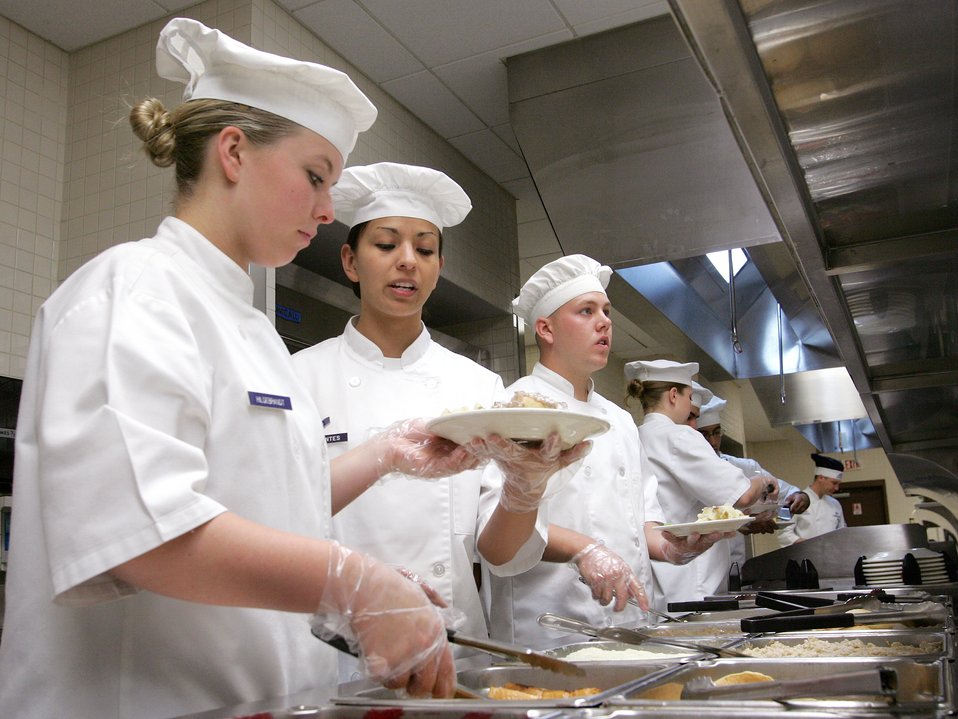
Culinary Arts

Airman Basic Brittney Hildebrandt takes a plate from Senior Airman Crystal Cervantes on the breakfast serving line at the Culinary Arts Training Center at Lackland Air Force Base, Texas, Monday, March 13, 2006. The Airman are services students learning the food lab. Both students helped prepare the breakfast and now serve it up to fellow students.